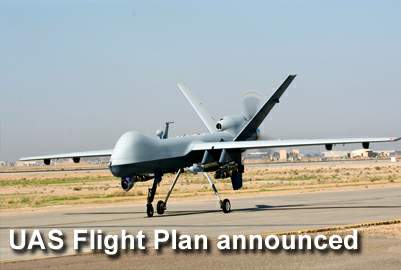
Unmanned aircraft take on increased importance

The U.S. military's expanded overseas use of unmanned aircraft highlights the increased importance of such aerial platforms to current and future military operations. The Unmanned Aircraft Systems Flight Plan was announced July 23 and will serve as a template for how the Air Force will look in 2047 - the 100th anniversary of the U.S. Air Force.